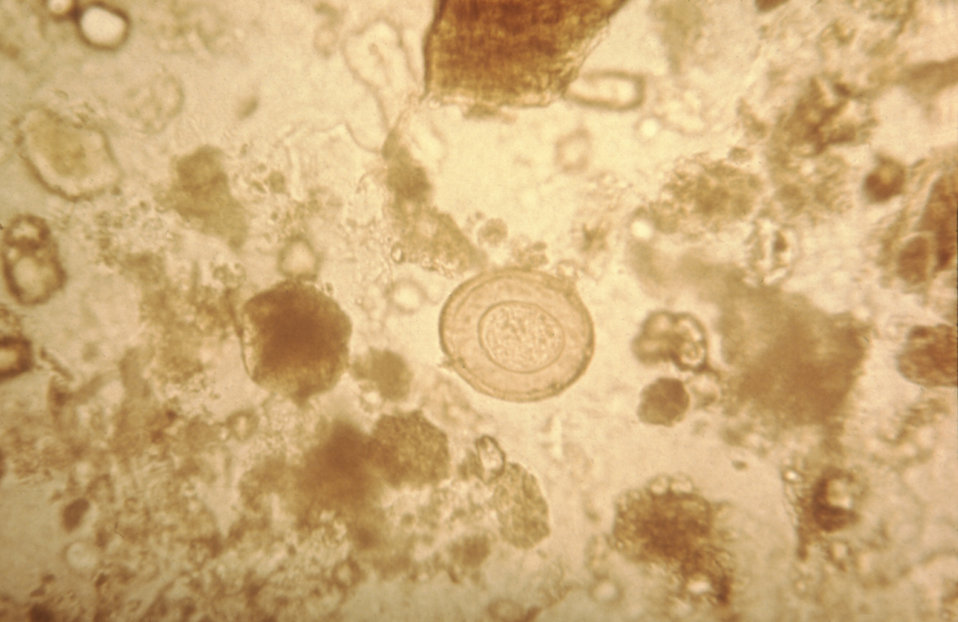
This micrograph depicts an egg from a Hymenolepis diminuta tapeworm, or cestode.